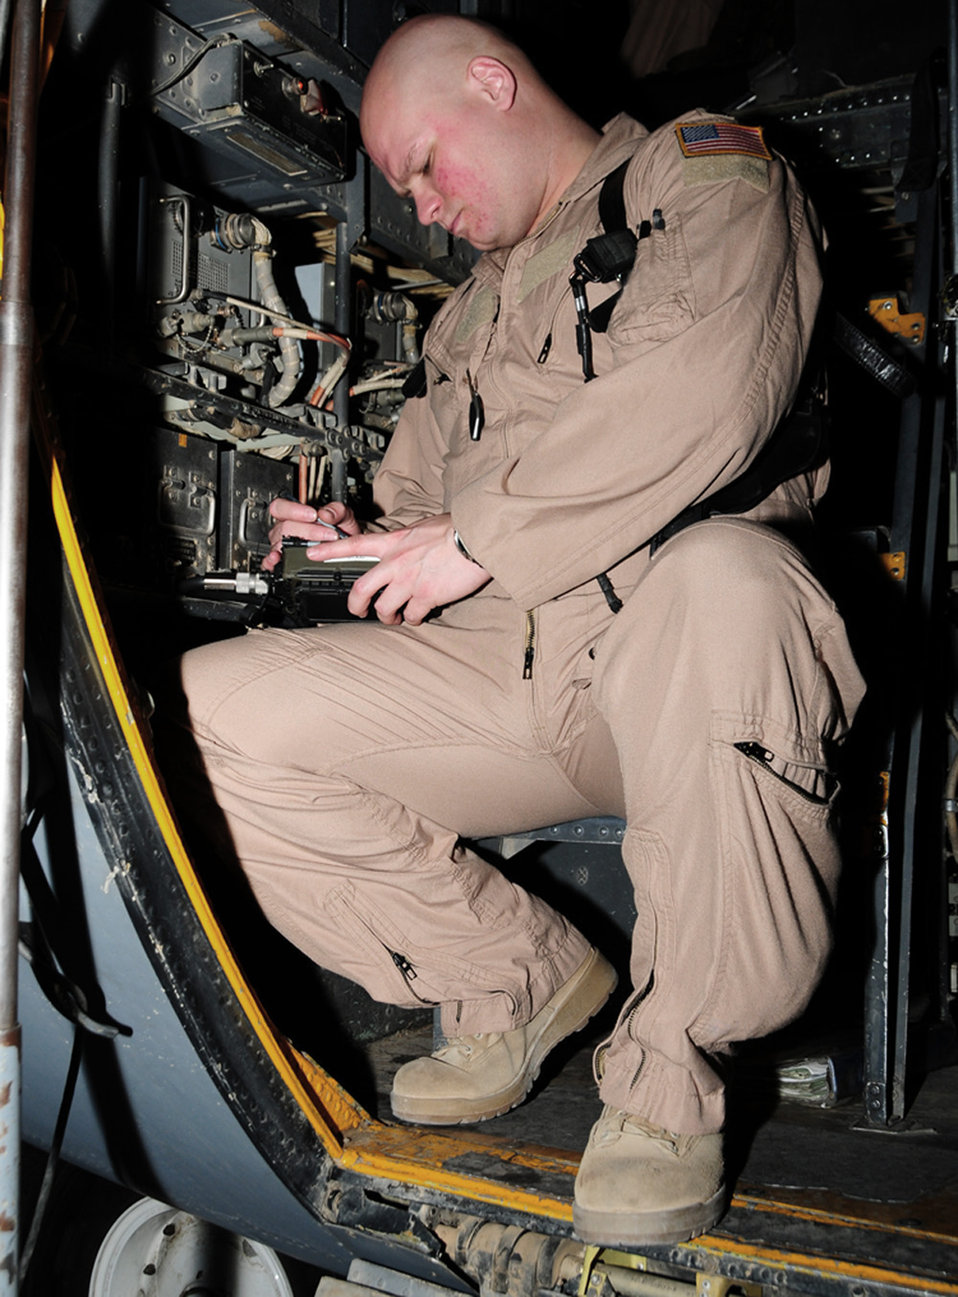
Quick recognition, action saves C-130 aircrew, Soldiers

Capt. Andrew Gillis test a navigation radio during his preflight check in a C-130 Hercules May 28 at an air base in Southwest Asia. The navigation radio is used during periods of low flight visibility. Captain Gillis is a 737th Expeditionary Airlift Squadron C-130 aircraft commander deployed from Dyess Air Force Base, Texas. He is originally from San Jose, Calif.